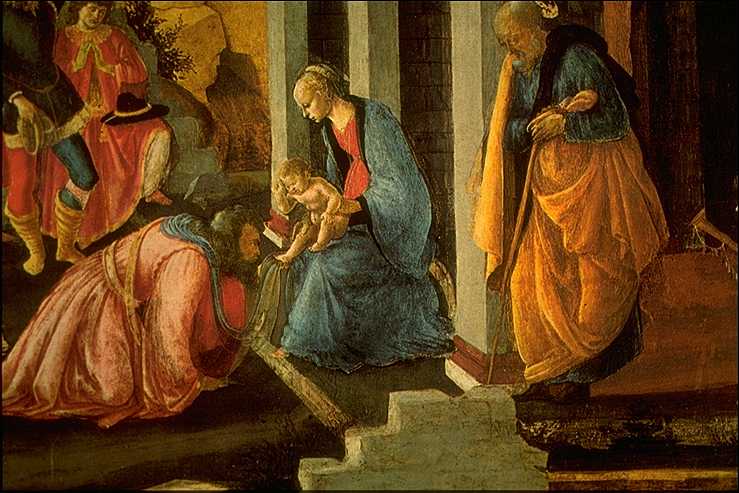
Adoration of Magi III